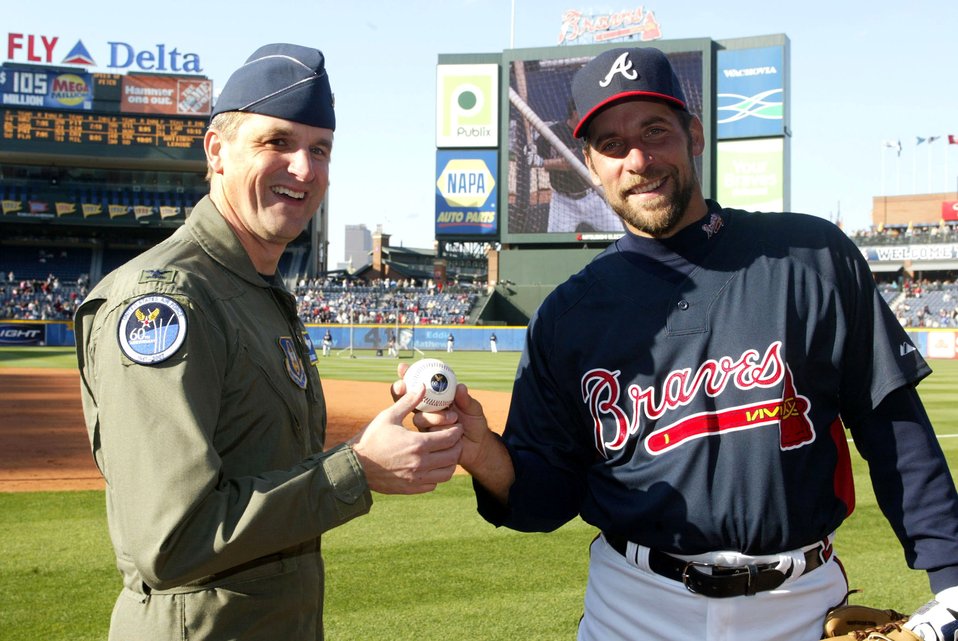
Anniversary baseball begins around the world journey

Col. Heath Nuckolls along with Atlanta Braves pitcher John Smoltz present a baseball that will make a trip around the world commemorating the Air Force's 60th Anniversary at the April 6 opening home game at Turner Field in Atlanta. The baseball will return to Turner Field during a September home game. The Heritage to Horizons events throughout year lead up to Atlanta Air Force Week, hosted by Air Force Reserve Command Oct. 8-14. Colonel Nuckolls is the commander of the Air Force Reserve's 94th Airlift Wing at Dobbins Air Reserve Base, Ga.